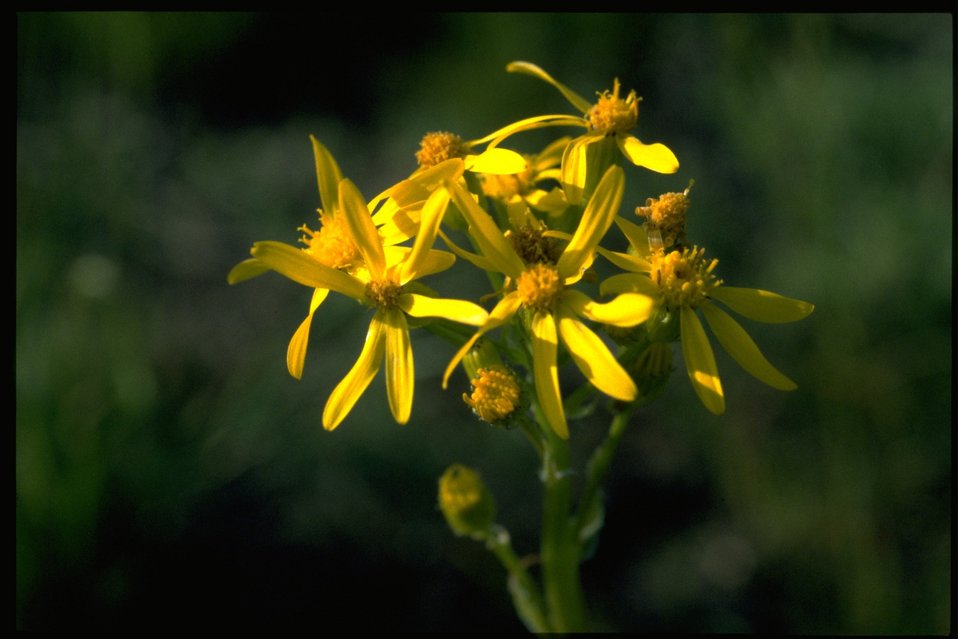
Closeup shot of tall Western Groundsel, Senecio Integerimus, wildflower.